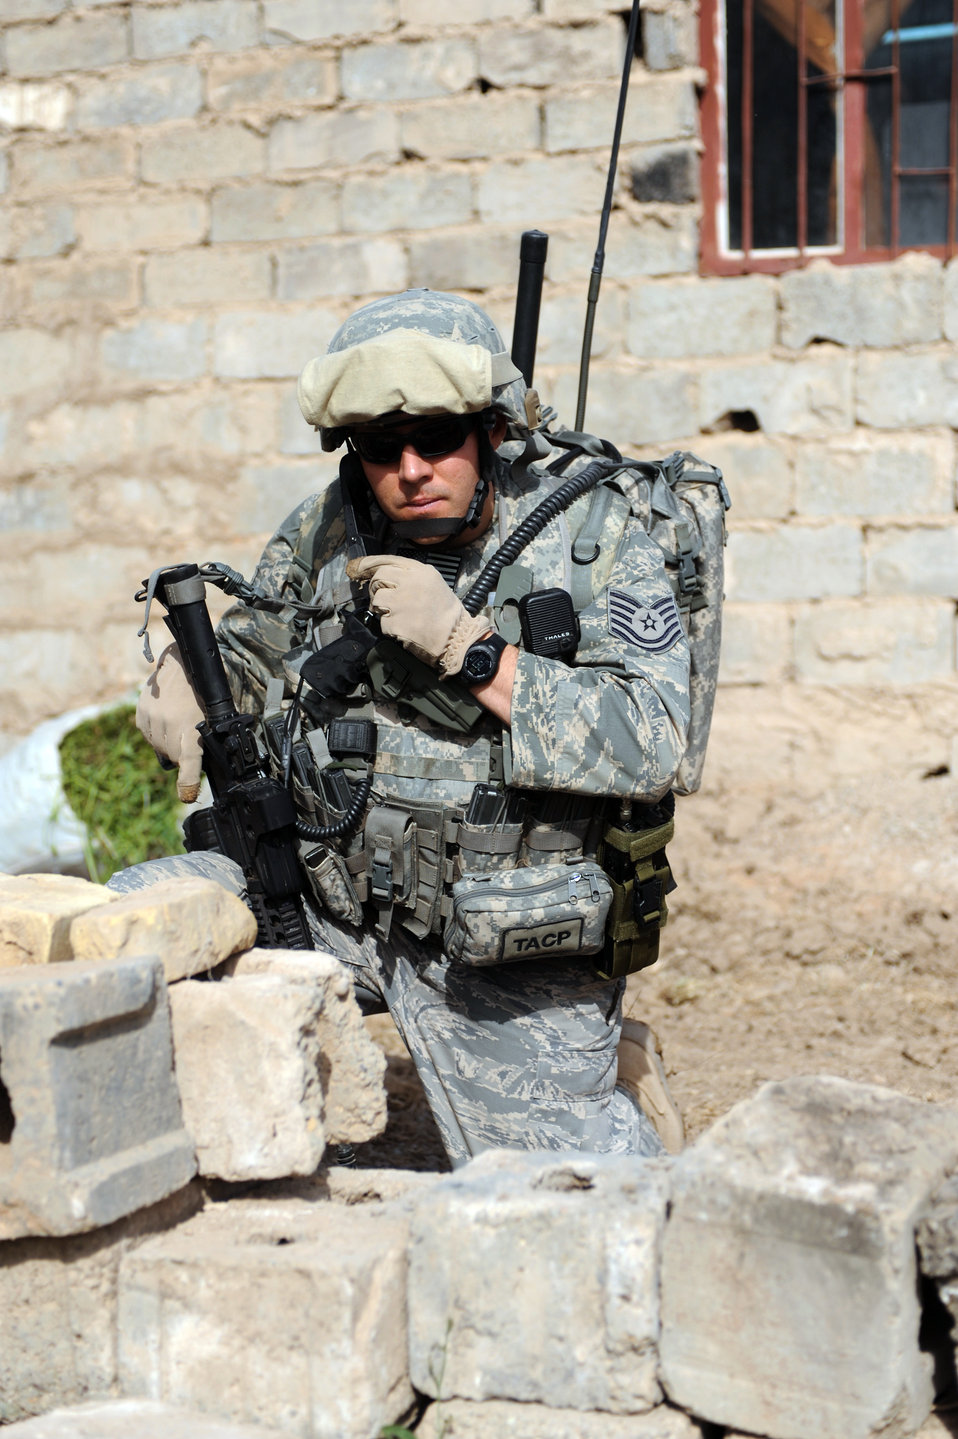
Airmen support Soldiers by putting bombs on targets

U.S. Air Force Tech Sgt. Beiuterman Jenkins attached to 2Tech. Sgt. Beiuterman Jenkins communicates his location after a weapons and munitions search in the neighborhood of Abu Nassir in Abu Ghraib, Iraq, May 13. U.S. Forces along with the Iraqi army work together in a combined effort to track down and arrest Iraqi Insurgents operating in the Abu Ghraib province of Iraq. Sergeant Jenkins is attached to 2nd Brigade, 1st Infantry Division.